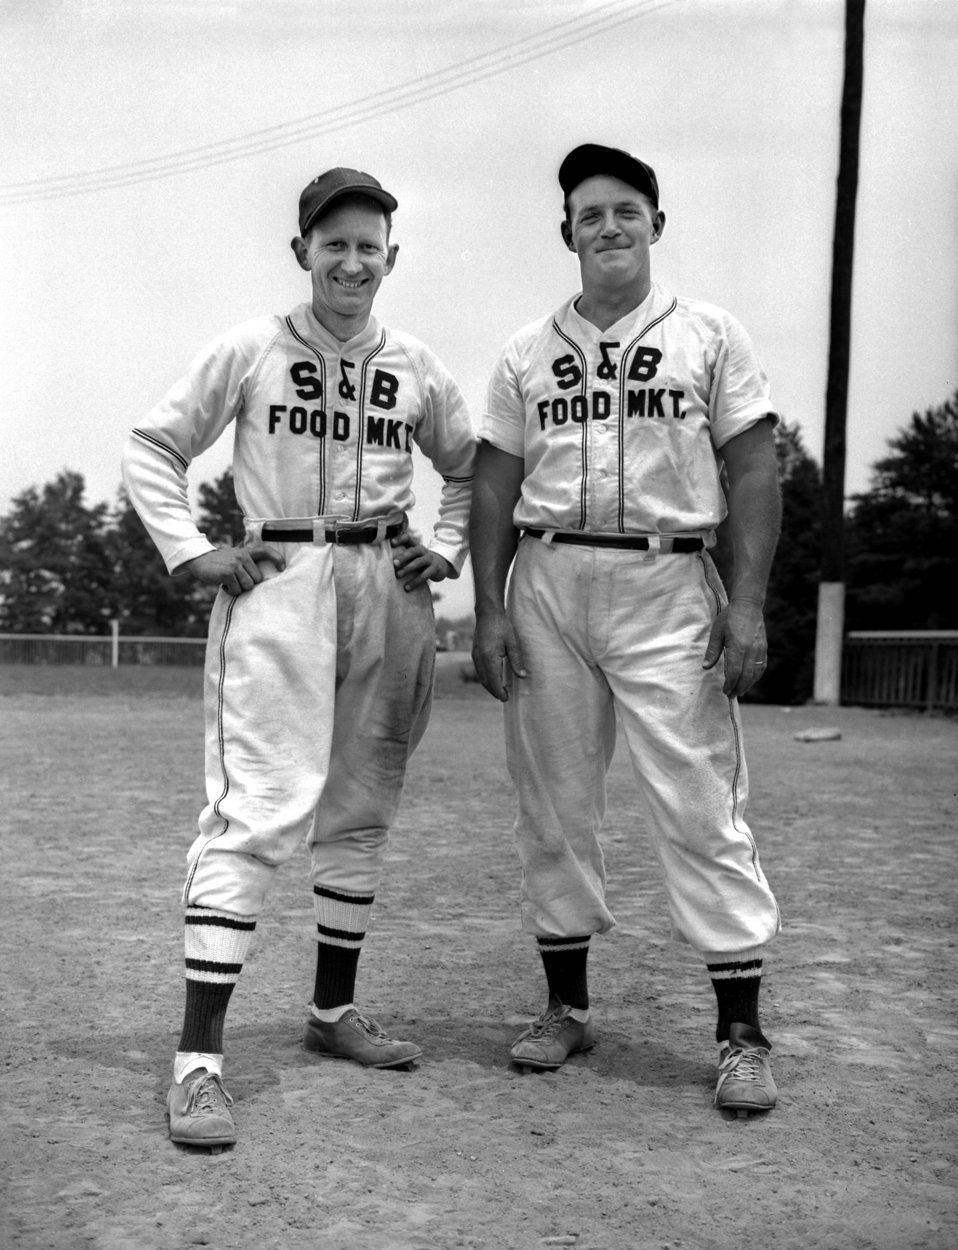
SandB Food Market Soft Ball Players Oak Ridge

005061 DOE photo by Ed Westcott

S&B Food Market Soft Ball Players Oak Ridge Tennessee 6/7/1948